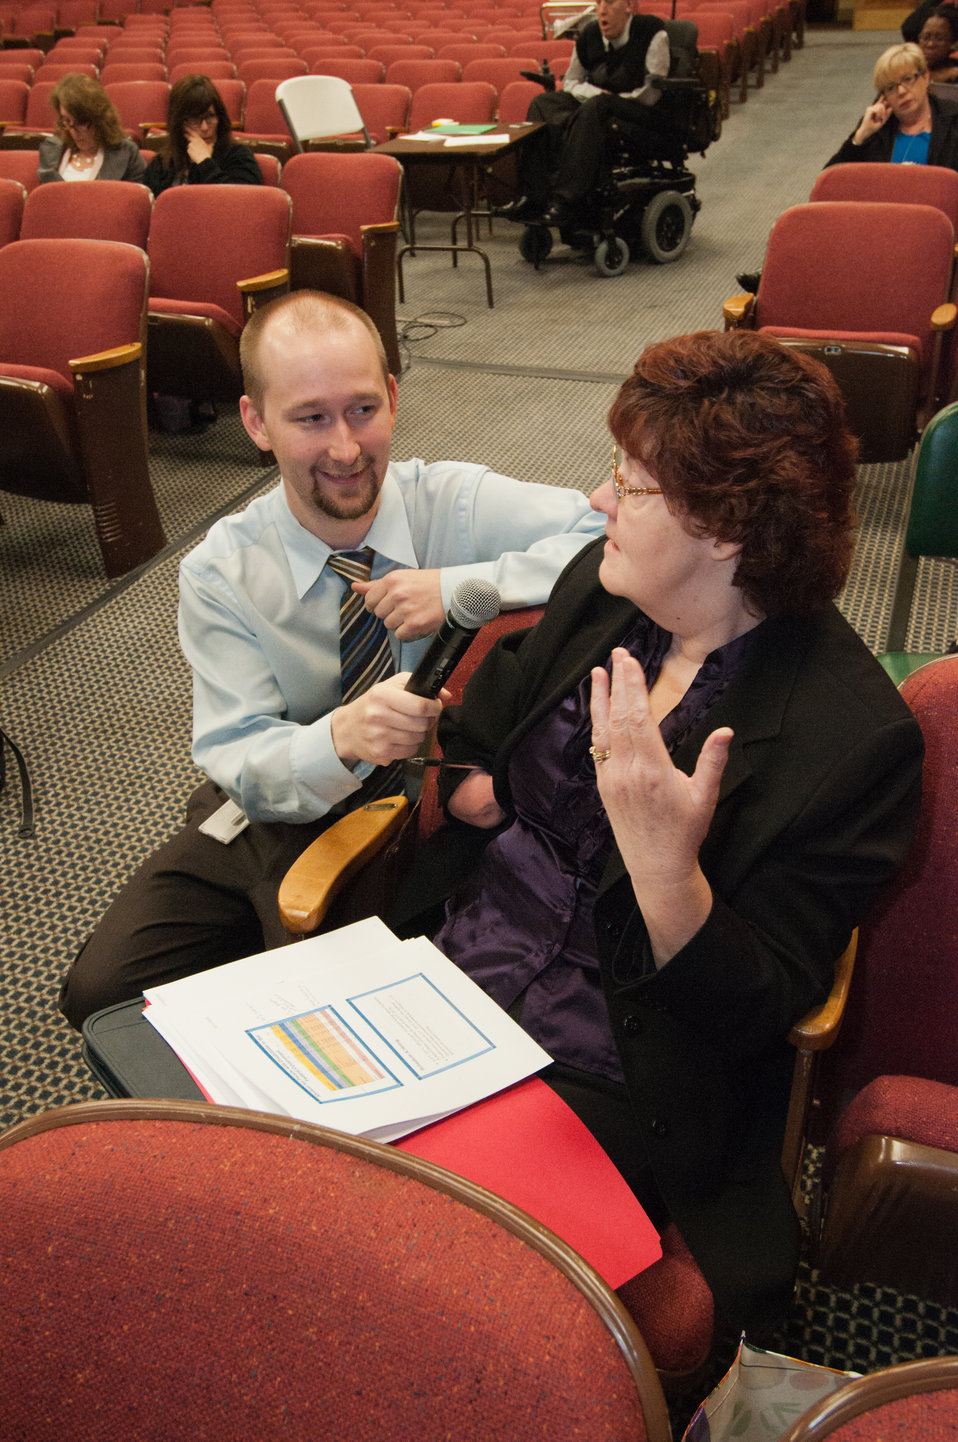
Office of Personnel Management (OPM) Diversity and Inclusion Program Manager Michael Murray poses questions to U.S. Department of Agriculture (USDA) Food Safety Inspection Service (FSIS) Selective Placement Program Manager Sharon Randle at USDA’s Office of Human Resources Management (OHRM) Disability Employment Program Team Training at USDA in Washington, D.C. on Tuesday, May 14, 2013.